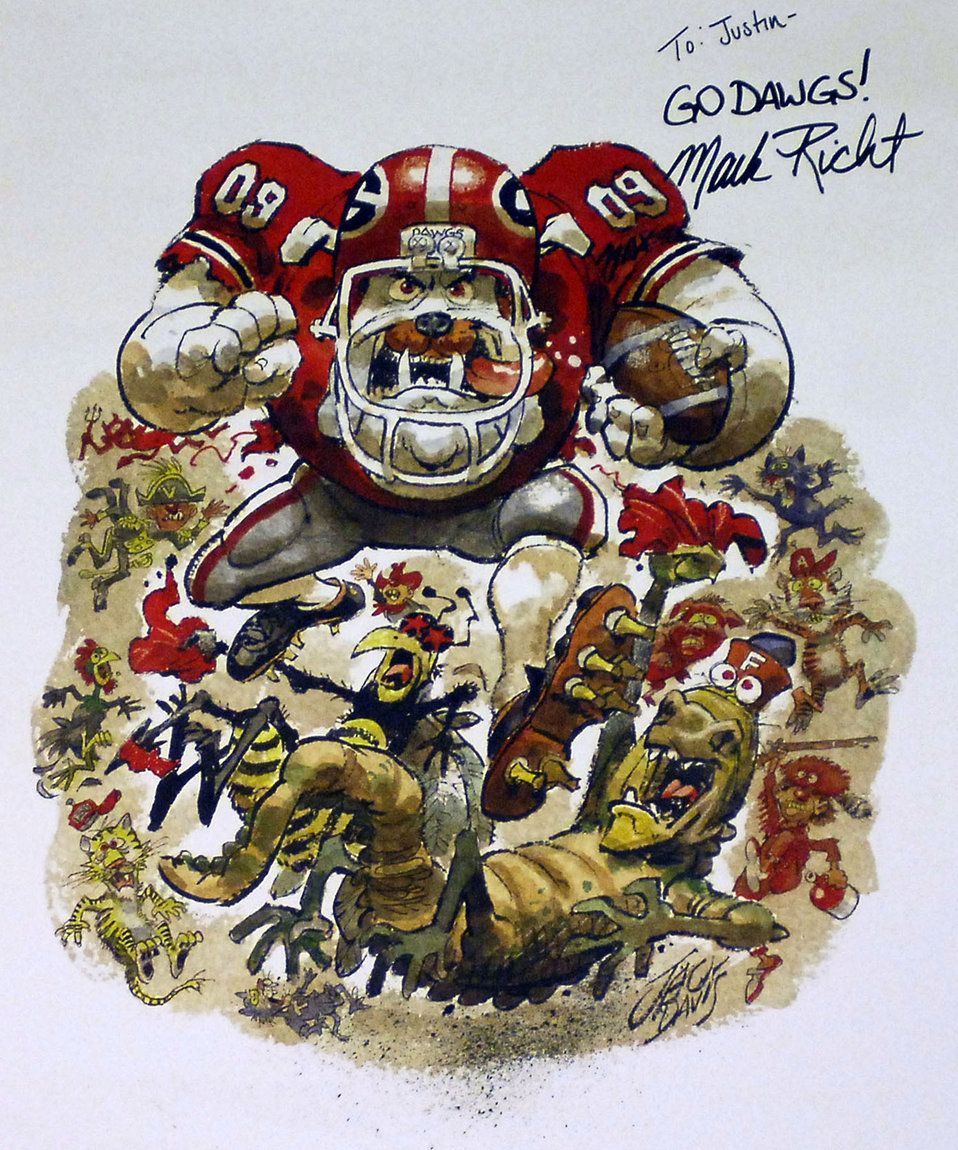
NCAA football lifts morale for doctors, wounded troops

A University of Georgia caricature, signed by football head coach Mark Richt, hangs over a trauma bed Dec. 12, 2009 at the Craig Joint Theater Hospital at Bagram Airfield, Afghanistan. Many NCAA teams, especially those from the South Eastern Conference sent memorabilia to brighten the spirits of the wounded servicemembers and staff.